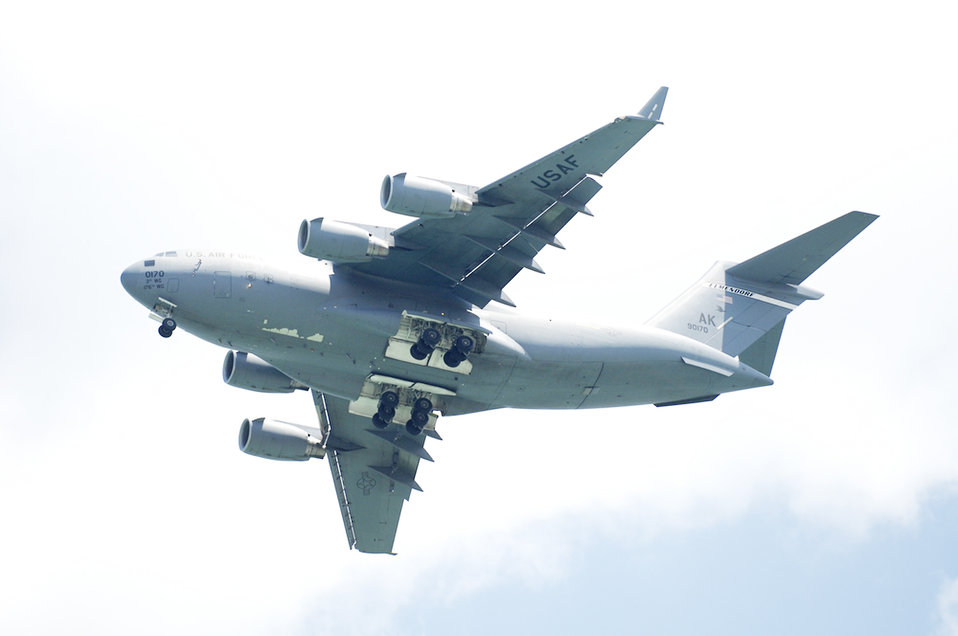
Mobility supremacy

A C-17 Globemaster III conducts a flyover above the 2010 Singapore air show held at Changi Airport Feb. 3, 2010. The aircraft is assigned to Elmendorf Air Force Base, Alaska. The trade and air show happens every two years and has participants from all over the world.